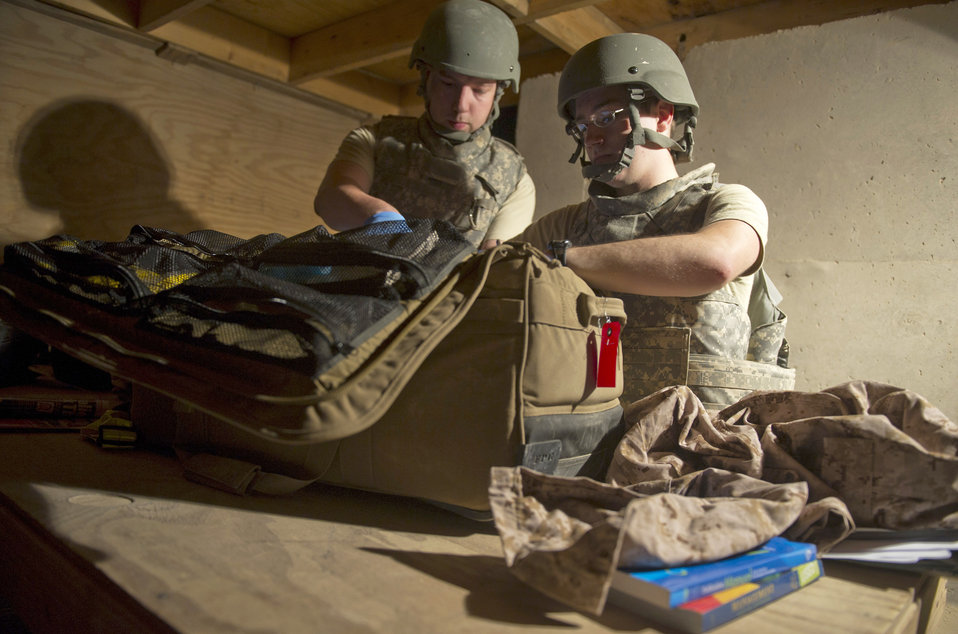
Staging facility

Senior Airman Cyril McKenney (left) and Airman 1st Class Dennis Nellessen search a patient's bag May 26, 2011, during an anti-hijacking check prior to loading patients onto an aircraft at the contingency aeromedical staging facility at Camp Bastion, Afghanistan. Airman McKenney and Airman Nellessen are aerospace medical technicians assigned to the 451st Expeditionary Aeromedical Evacuation Squadron.